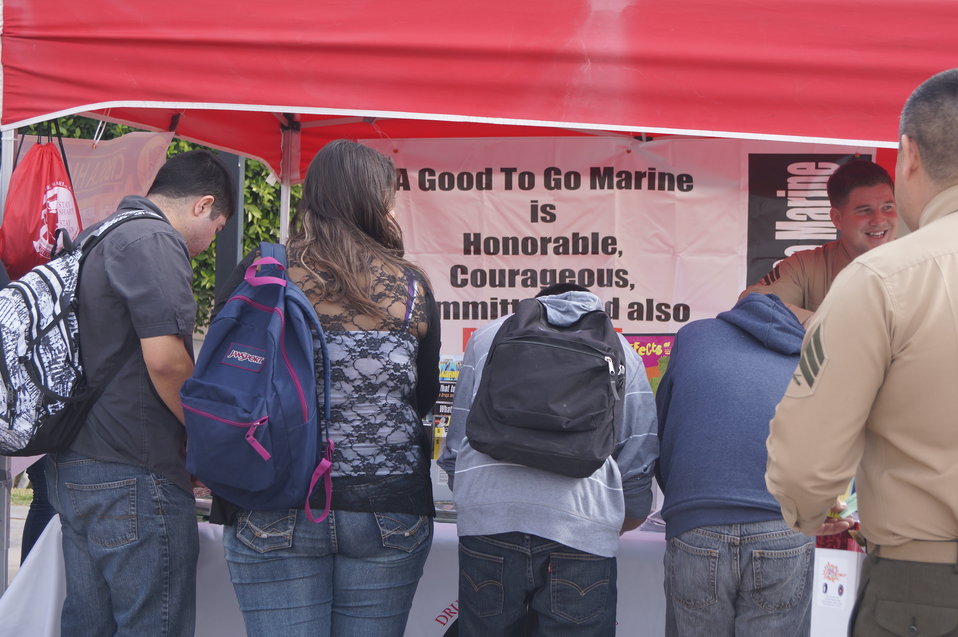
Nationa Drug Facts Week - CIBOLA HS

The Drug Demand Reduction Program out of Yuma, Arizona held numerous events at local schools to support NIDA's National Drug Facts Week, Jan. 27-Feb. 2 2014. Teens participated in drug awareness games, and helped to Shatter the Myths about teen substance abuse.